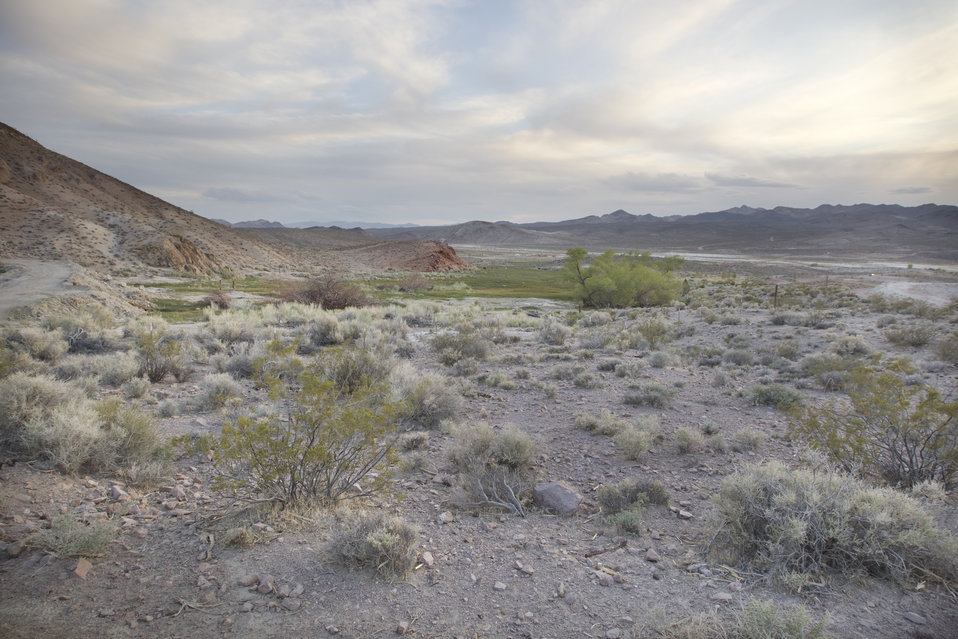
Amargosa Toad Restoration Site

Partners for Fish and Wildlife Program. Beatty, Nevada.